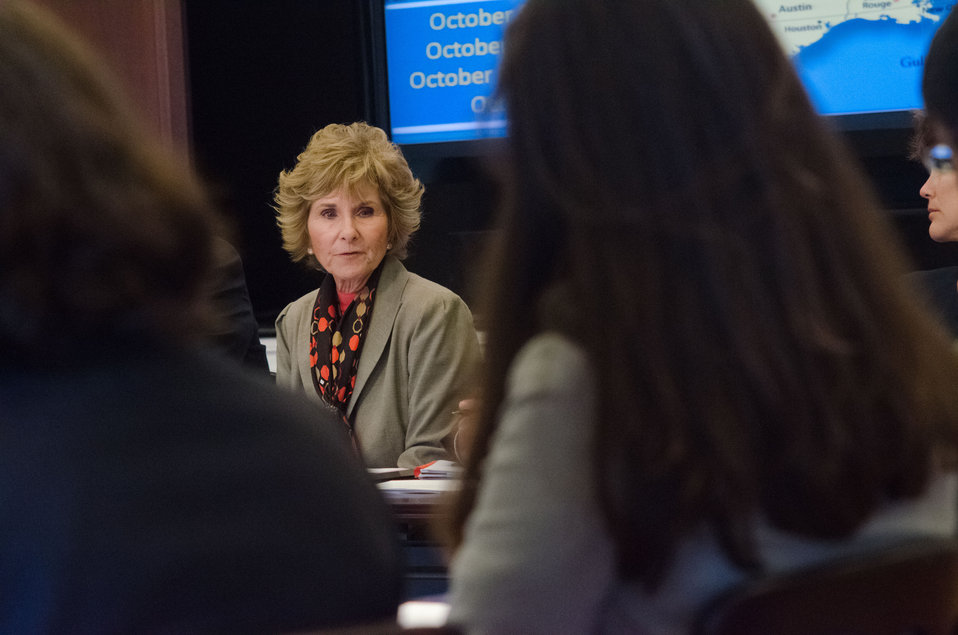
Federal Disaster Recovery Coordinator Colleen Callahan speaks about the continuing drought in rural America during the White House Rural Council chaired by Agriculture Secretary Tom Vilsack at the White House in Washington, D.C. on Friday, Oct. 5, 2012. The White House Rural Council discusses recent White House announcements and Secretary Vilsack asked council members to outline their work plan for the coming months.